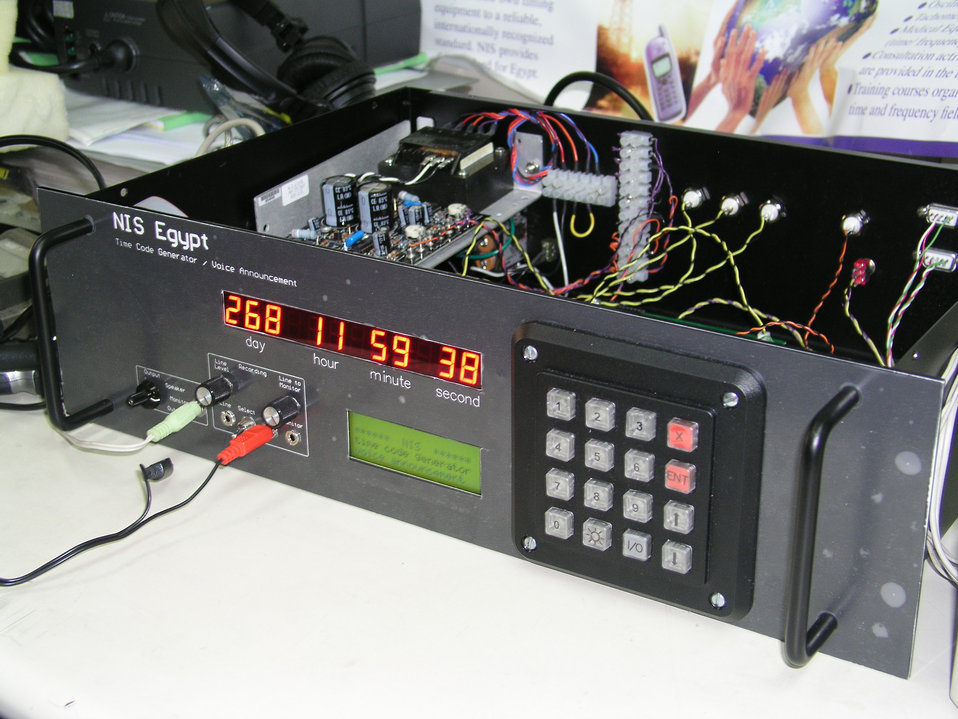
Time Signal Generator

This time code generator, built by NIST staff, contains custom electronics that keep track of the time of day, sychronized with audio recordings. The signals are sent to satellites, which transmit the time to millions of homes in North Africa and the Middle East.